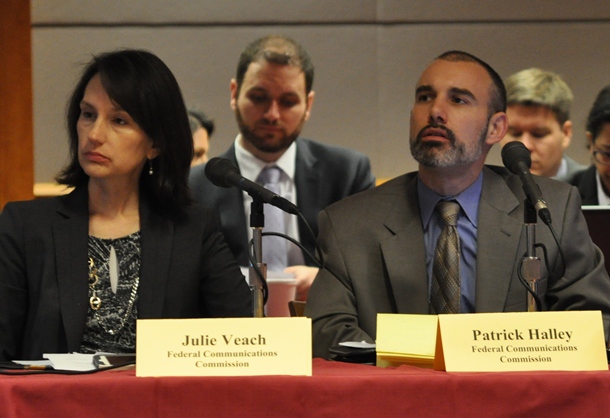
Rural Broadband Workshop: March 19, 2014

Moderators for Panel 1: Broadband Needs, Challenges and Opportunities in Rural America